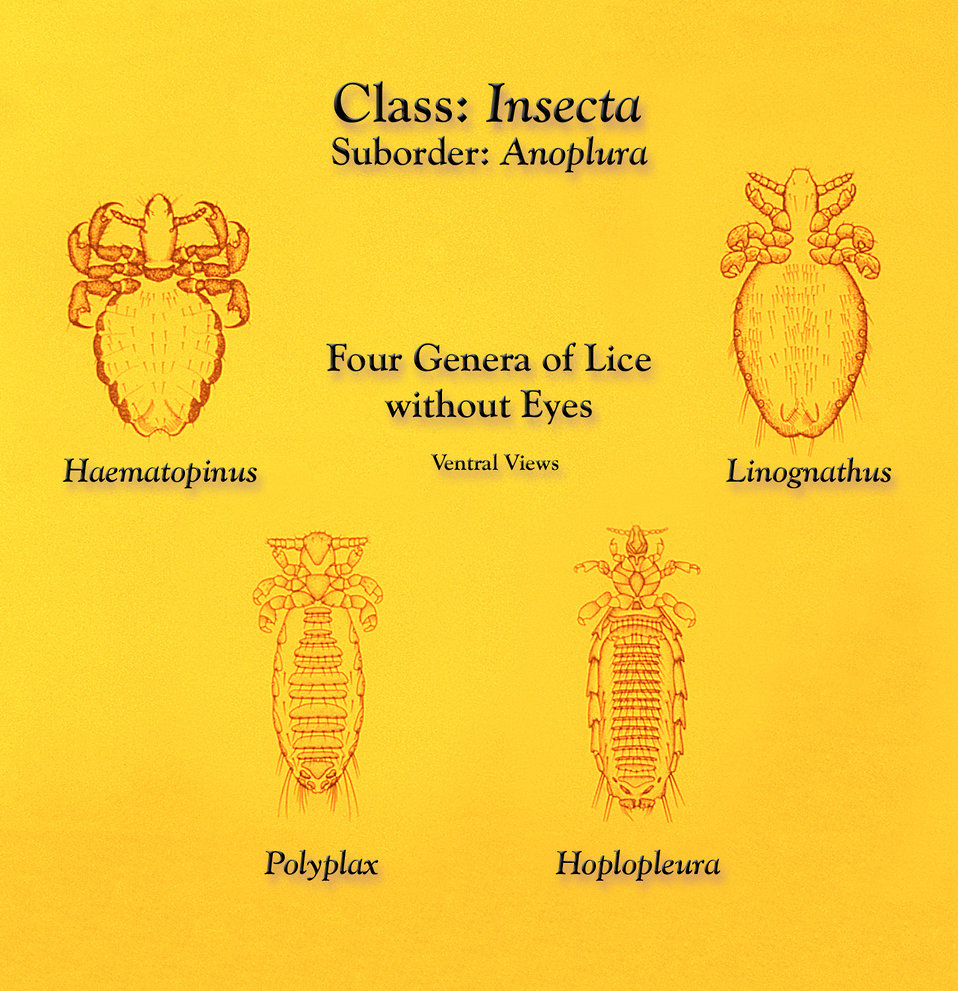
This illustration depicts ventral views of four genera of lice that do not possess eyes.